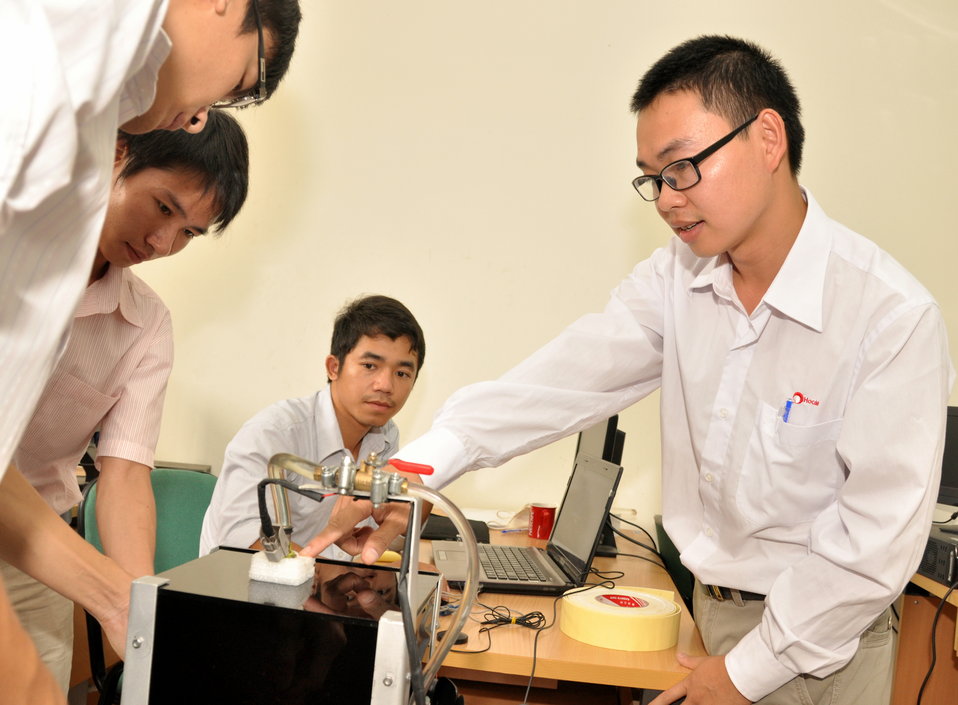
Ho Chi Minh City University of Technical Education, HEEAP Partner

Faculty Member Nguyen Ba Hai
January 11, 2013